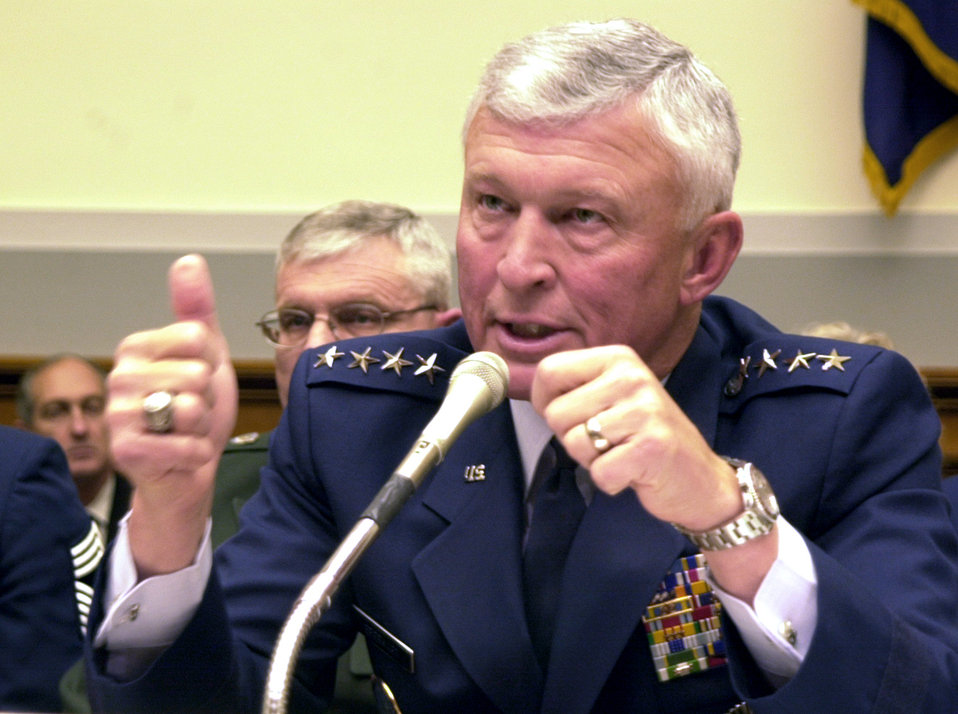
Eberhart testifies

WASHINGTON -- Gen. Ralph E. Eberhart briefs members of the House Armed Services Committee on March 13. Eberhart, who is the commander of U.S. Northern Command and the North American Aerospace Defense Command, described to lawmakers how USNORTHCOM and other organizations counter threats to homeland security.